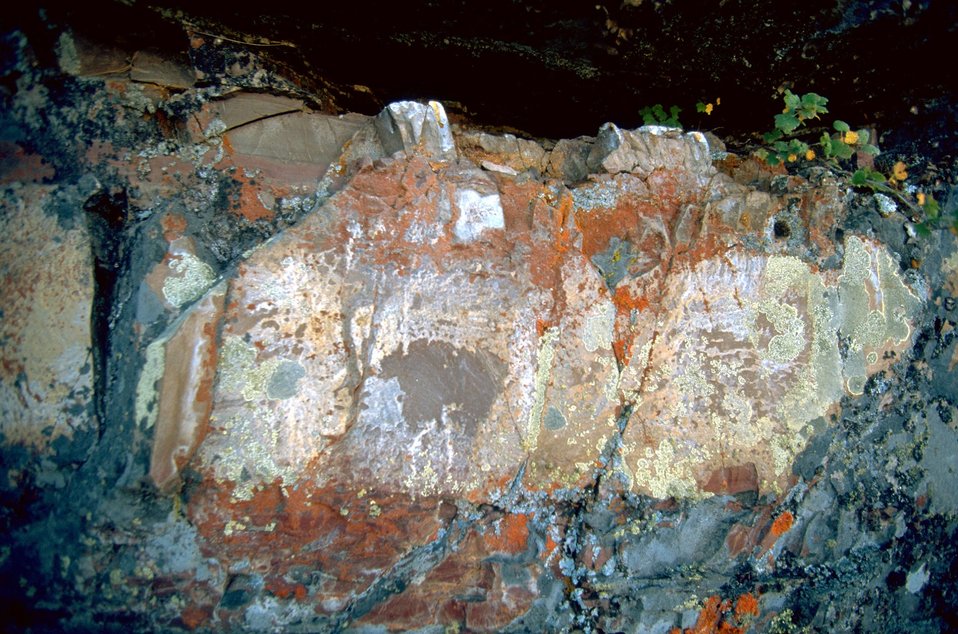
Lichen (algae) growing on rocks